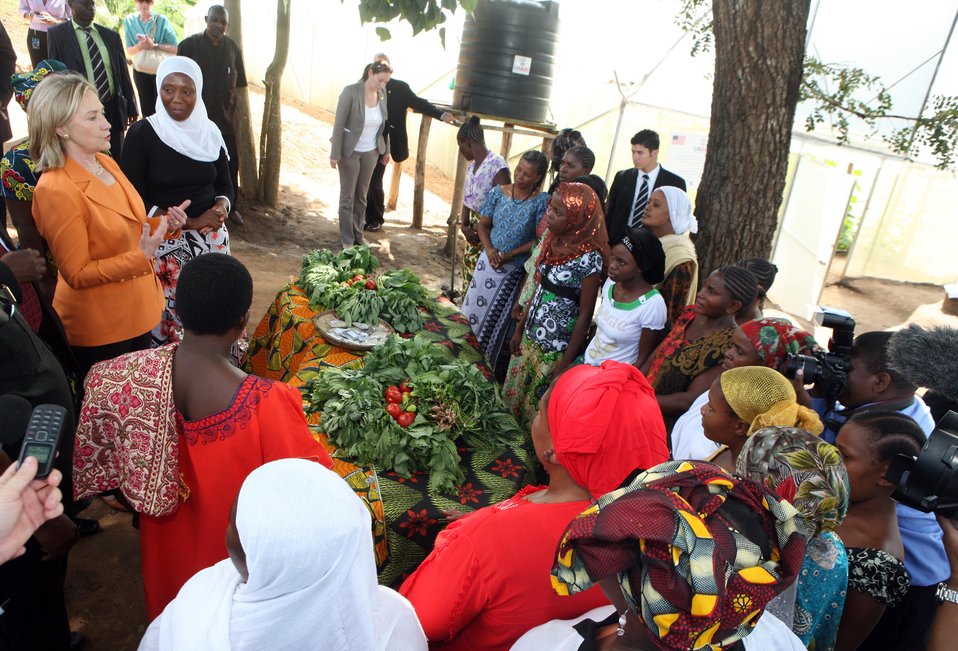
Secretary Clinton Speaks With Tanzanian Women Farmers

U.S. Secretary of State Hillary Rodham Clinton speaks with Tanzanian women farmers at Mlandizi Farm Women's Cooperative in Mlandizi, Tanzania, on June 12, 2011.